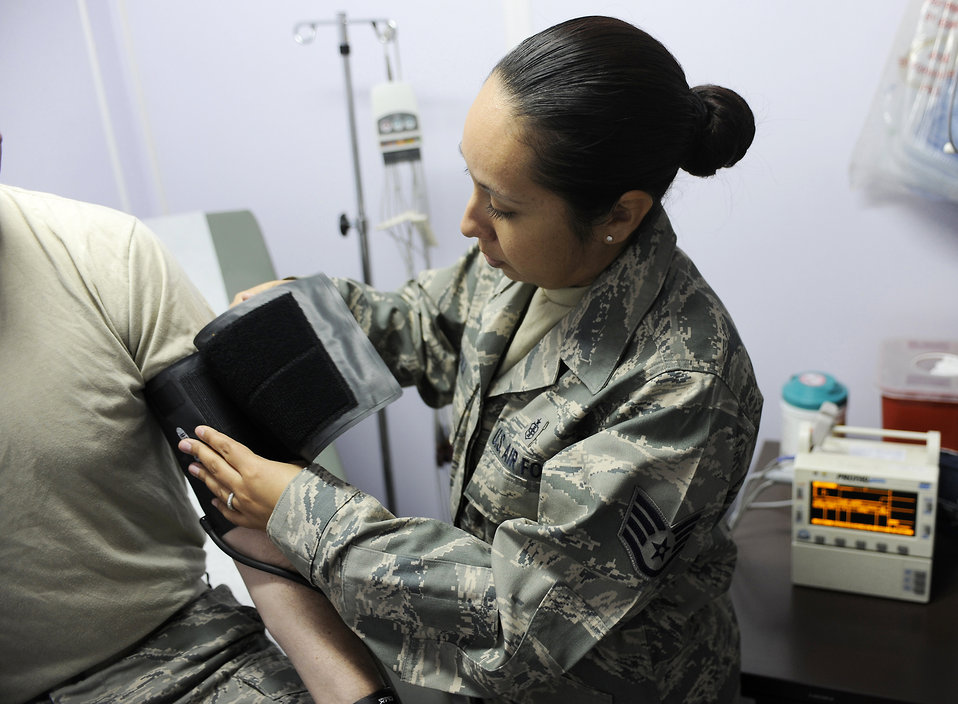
SABC saves Soldier

Staff Sgt. Alisa Picena fastens a blood pressure cuff during a routine exam Jan. 28, 2011, at Kandahar Airfield, Afghanistan. Using their advanced medical training along with basic self-aid buddy care, Sergeant Picena and a team of medics were able to save a life during a recent attack against the base. Sergeant Picena is the 451st Air Expeditionary Wing NCO in charge of the clinic.